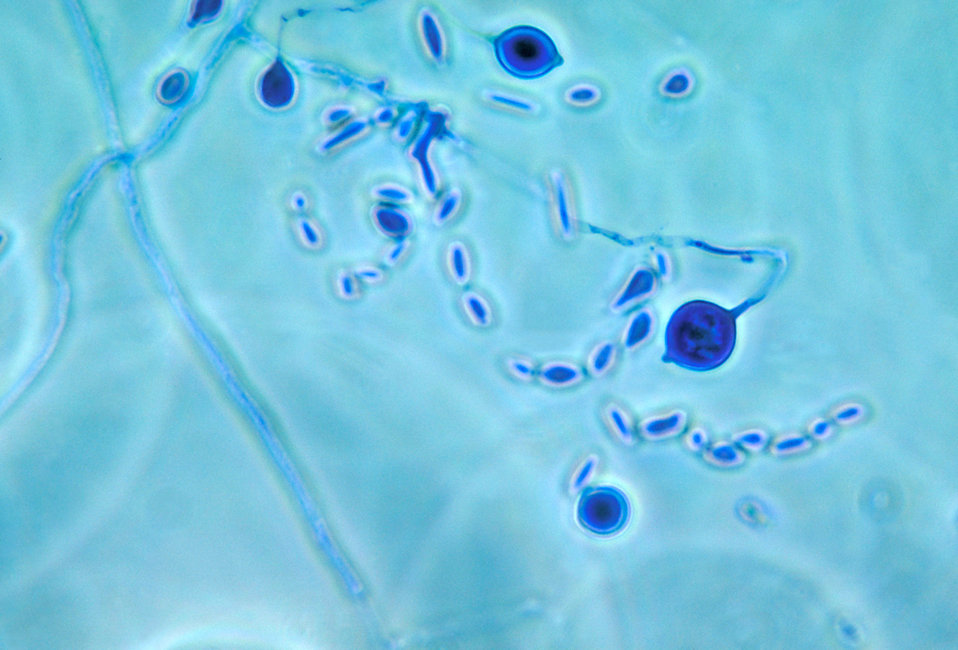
This photomicrograph depicts fungal spores and adiaspores of what may be an Emmonsia sp., or Chrysosporium sp..